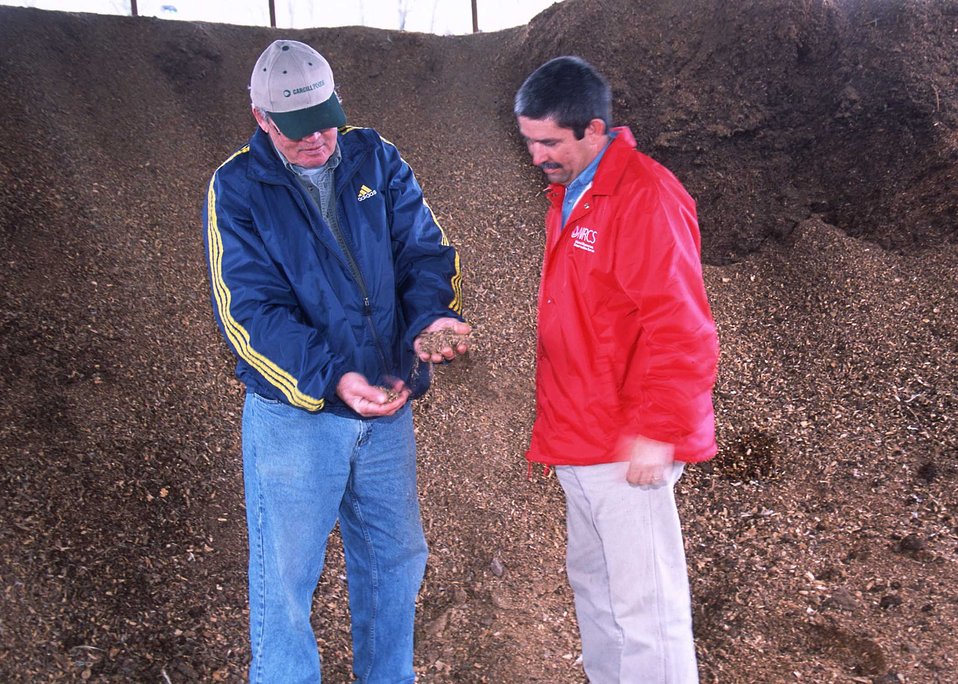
discussing composting from turkey manure and woodchips with cooperator in Benton, Arkansas.